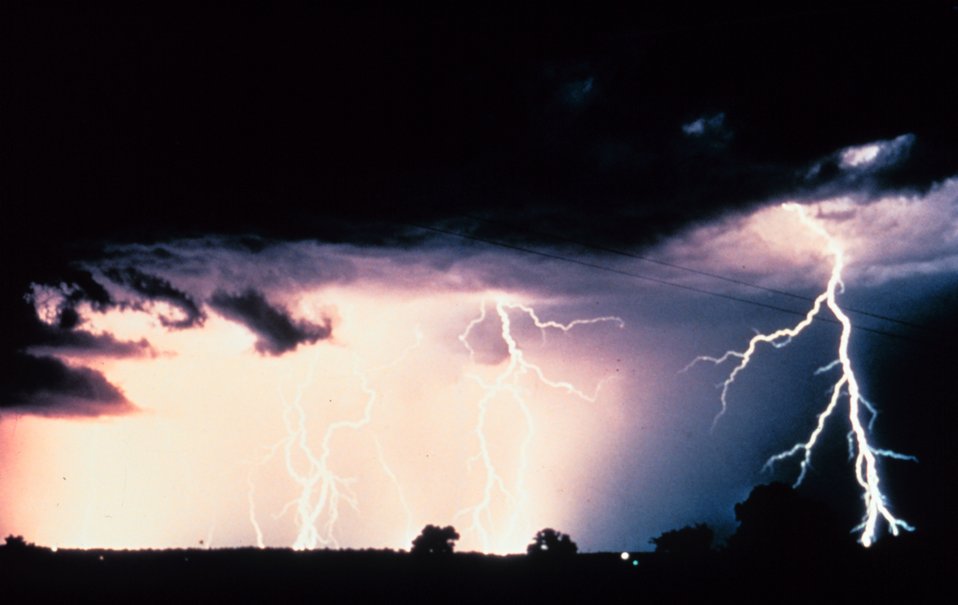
Multiple cloud-to-cloud and cloud-to-ground lightning strokes caught using time-lapse photography during a night-time thunderstorm.